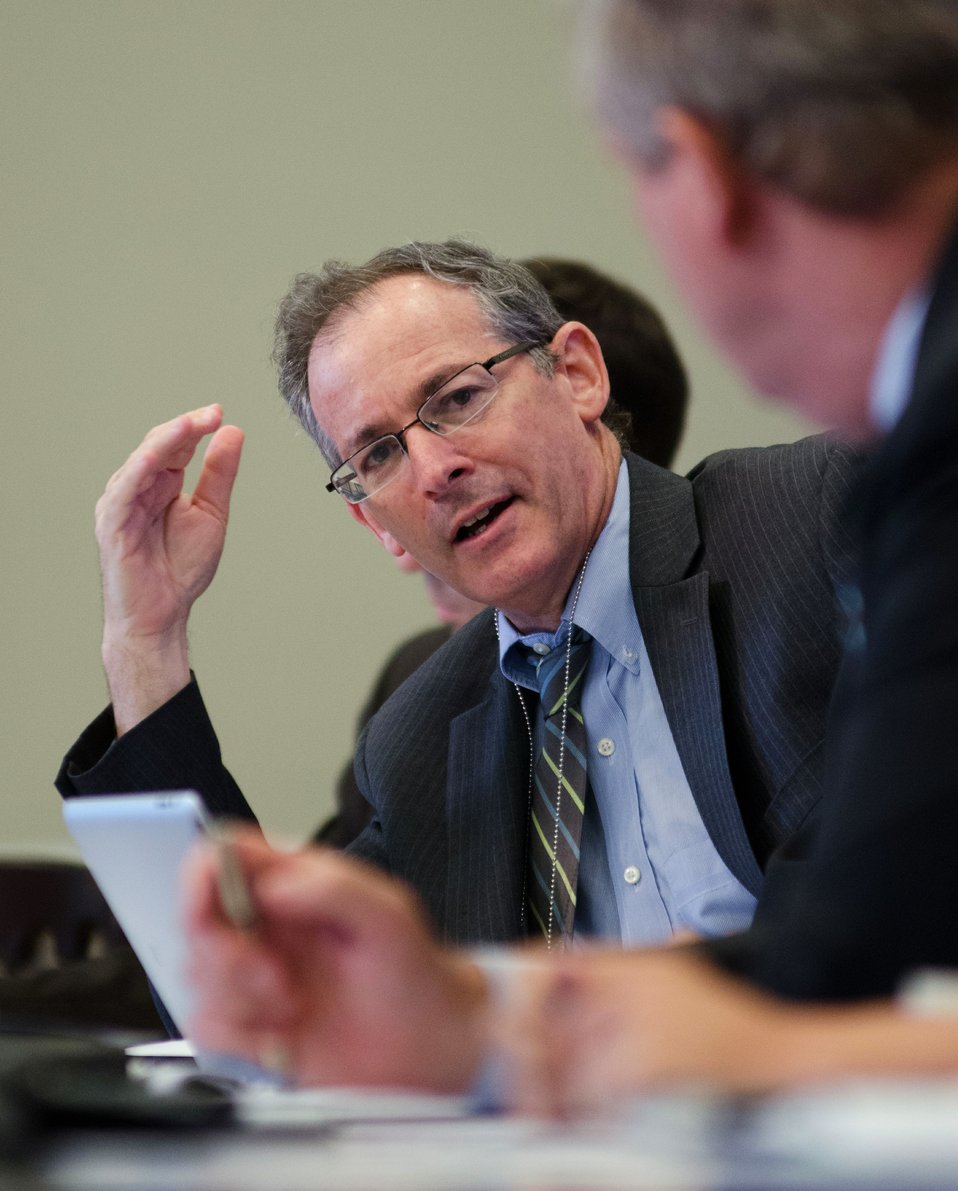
White House Domestic Policy Council Deputy Director Mark Zuckerman and Agriculture Secretary Tom Vilsack, right, in discussion, during a meeting of the White House Rural Council at the Executive Office Building in Washington, D.C. on Friday, July 27, 2012 to update members and stakeholders on the Administration response to the drought and explore ways to assist American farmers and ranchers suffering in its affects. Following President Obama’s instructions of using existing programs to support struggling farmers and ranchers the U.S. Department of Agriculture (USDA) has implemented several processes to assist American farmers and ranchers. USDA has streamlined drought disaster declarations directly from Drought Monitor data, allowed nearly 30 million acres under the Conservation Reserve Program (CRP) to be used for emergency haying or grazing, lowered payment reduction for CRP lands that qualify for emergency haying and grazing in 2012, from 25% to 10%, allowed producers to modify current Environmental Quality Incentives Program (EQIP) contracts to allow for grazing, livestock watering and other conservation activities to address drought conditions, and has authorized haying and grazing of Wetlands Reserve Program (WRP) easement area in drought-affected areas where haying and grazing is consistent with conservation of wildlife habitat and wetlands, and reduced the interest rate for Farm Service Agency (FSA) Emergency loans from 3.75% to 2.25%.